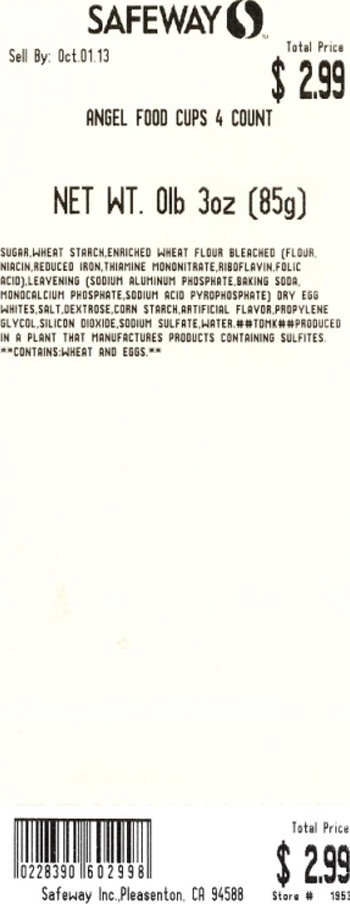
RECALLED – Angel Food Cakes

September 26, 2013 – Product Recall – Safeway Recalls Several Varieties of Angel Food Cake Due to Undeclared Soy and Milk Allergens.